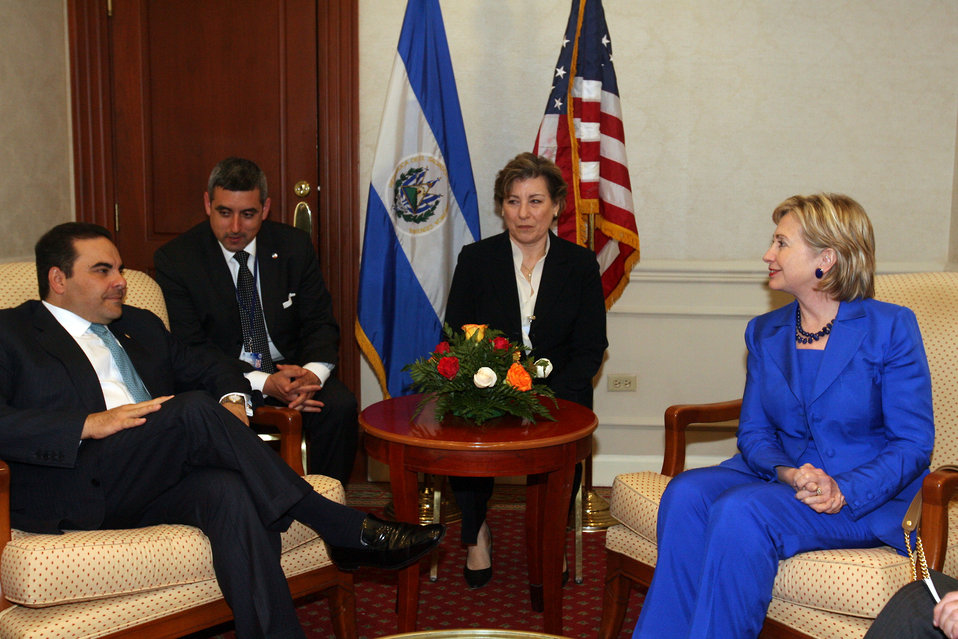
Secretary Clinton Meets With Outgoing Salvadoran President

U.S. Secretary of State Hillary Rodham Clinton meets with outgoing Salvadoran President Antonio Saca on the margins of the Pathways to Prosperity Ministerial in El Salvador May 31, 2009. Secretary Clinton is to lead the U.S. Delegation that is attending the inauguration of Salvadoran President Mauricio Funes, who takes office on June 1st.